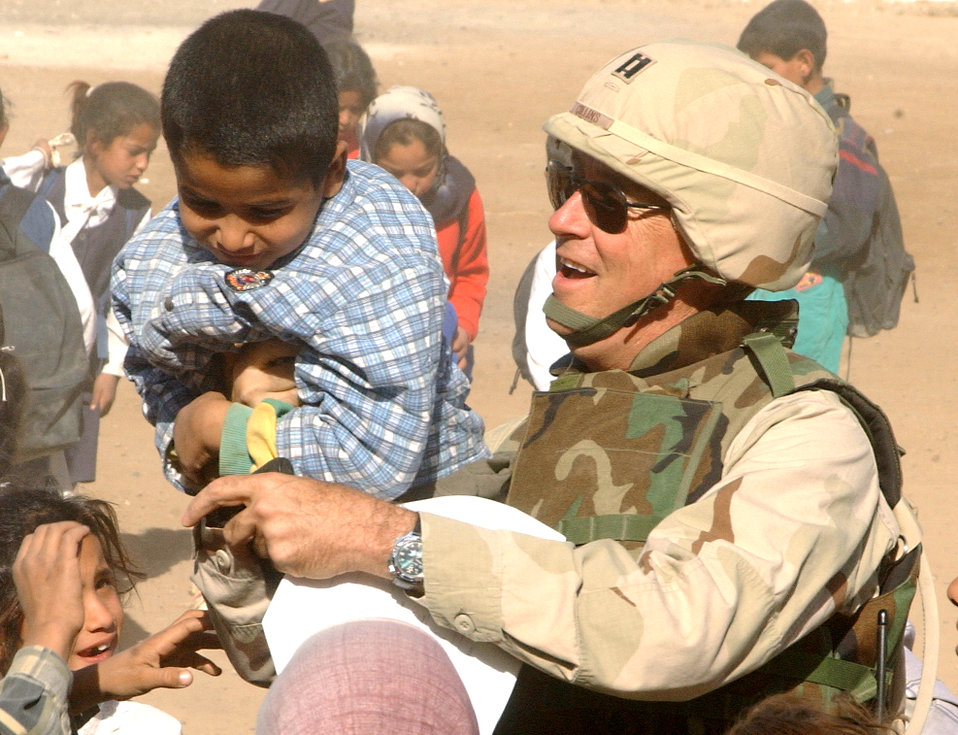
Airmen take part in Operation Pencil Box

NEAR BALAD AIR BASE, Iraq -- Chaplain (Capt.) Quinton Collins plays with a child outside an elementary school here Oct. 24. The visit was part of Operation Pencil Box, a humanitarian project to deliver school supplies to Iraqi children. Chaplain Collins is assigned to the 332nd Air Expeditionary Wing chapel at the air base.